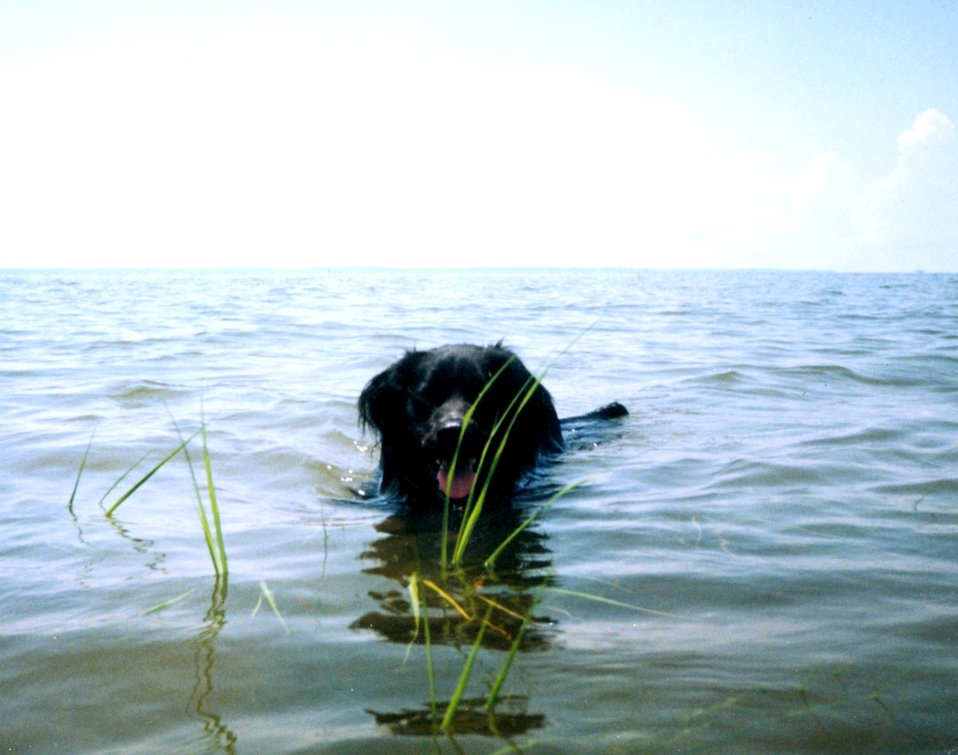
Chesapeake Water Dog, Canus aquus Chesapeakii. This dog is trained to search for submerged aquatic vegetation.